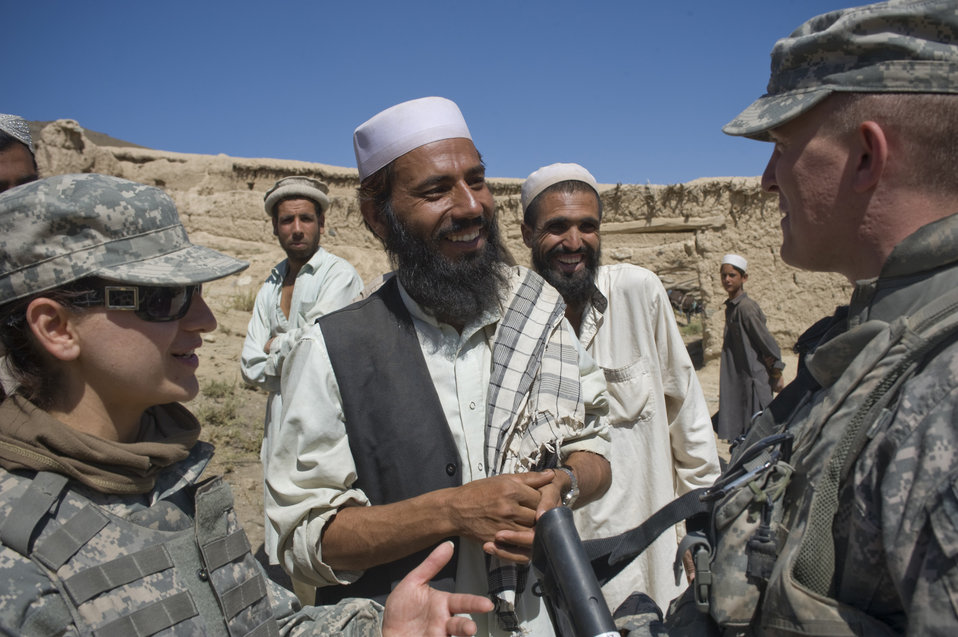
PRT strives to build relationships in remote village

Molly, an interpreter, expresses the gratitude of village leaders to Army Capt. Steve Kaiser for providing medical services to village residents for the day. The joint-service team has members from the Air Force, Army and Navy assigned to it. Captain Kaiser is a Kapisa and Parwan Provincial Reconstruction Team civil affairs officer.